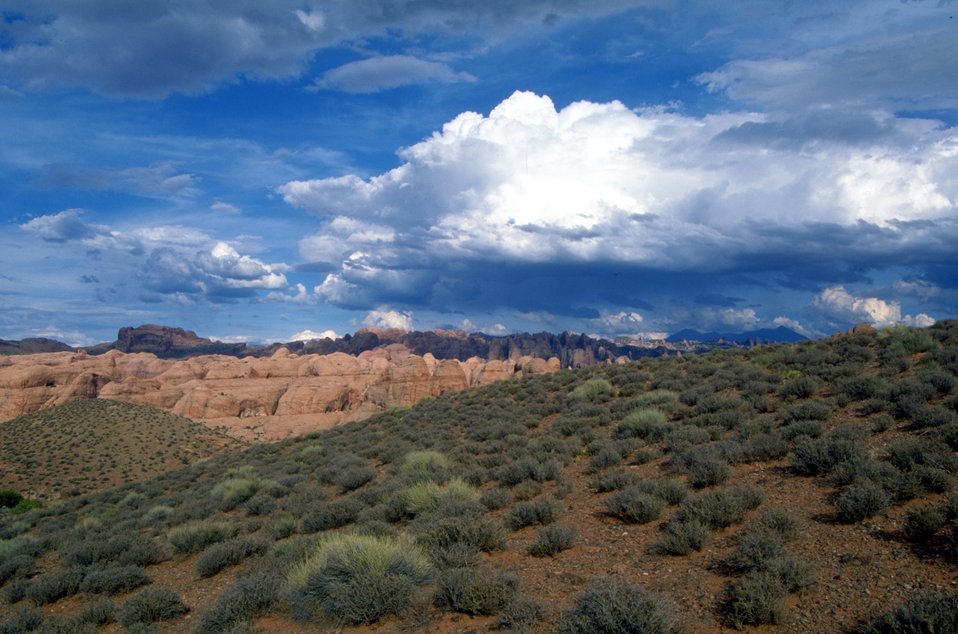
Behind The Rocks from Poison Spider Trail near Moab, Utah.